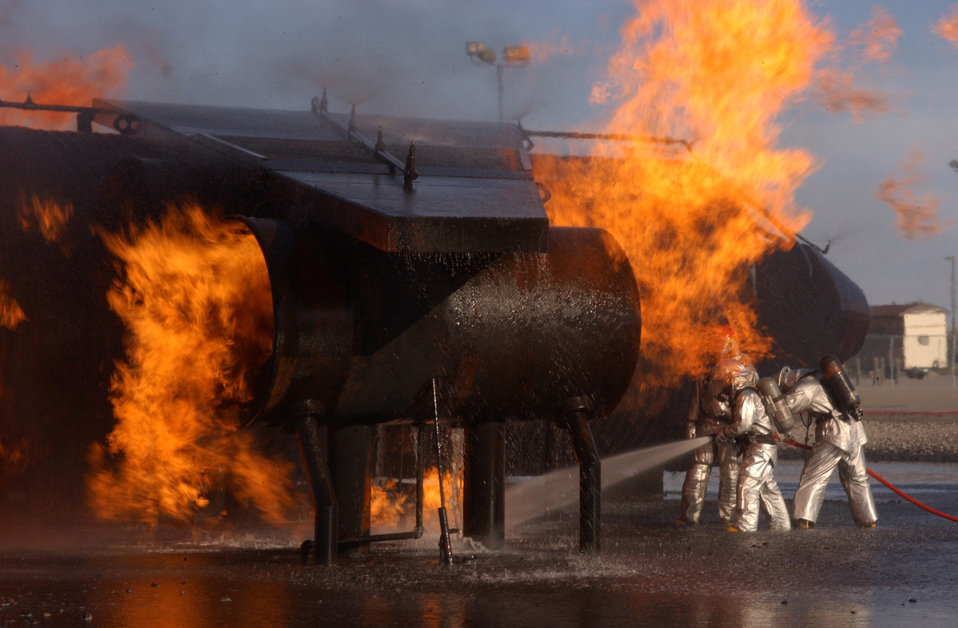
Into the flames

GOODFELLOW AIR FORCE BASE, Texas -- Firefighter trainees at the Department of Defense Fire Academy extinguish a training fire here recently. Students going into a fire are required to use specific firefighting equipment such as proximity suits and self-contained breathing apparatus.